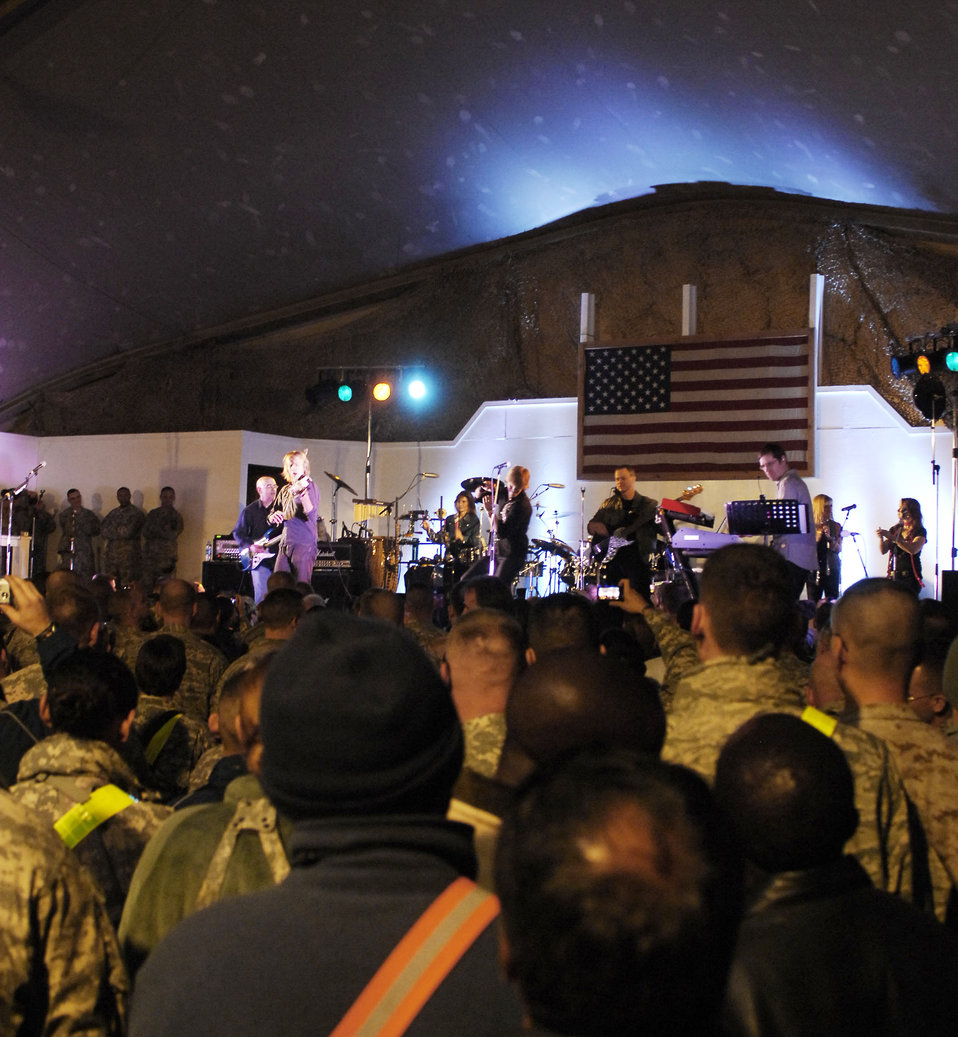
Celebrities thank troops at Thanksgiving concert

The Lieutenant Dan Band performs for troops Nov. 23, 2009, at Bagram Airfield, Afghanistan.